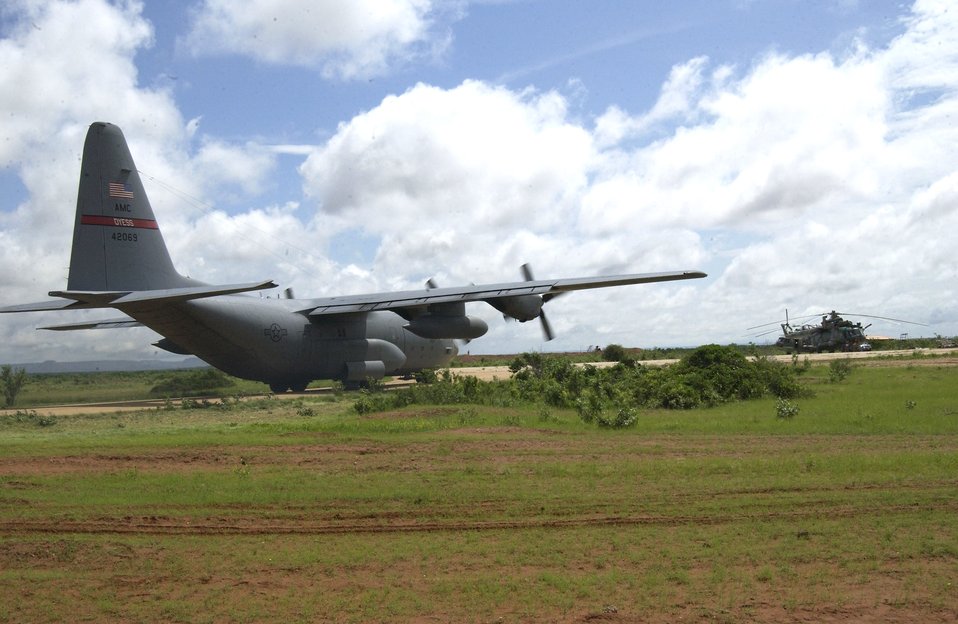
379th AEW supports flood relief operations in Ethiopia

A C-130 Hercules assigned to the 746th Air Expeditionary Flight from Southwest Asia flies missions in support of Combined Joint Task Force - Horn of Africa. The unit was tasked to deliver relief and humanitarian supplies to Ethiopia following a flood.